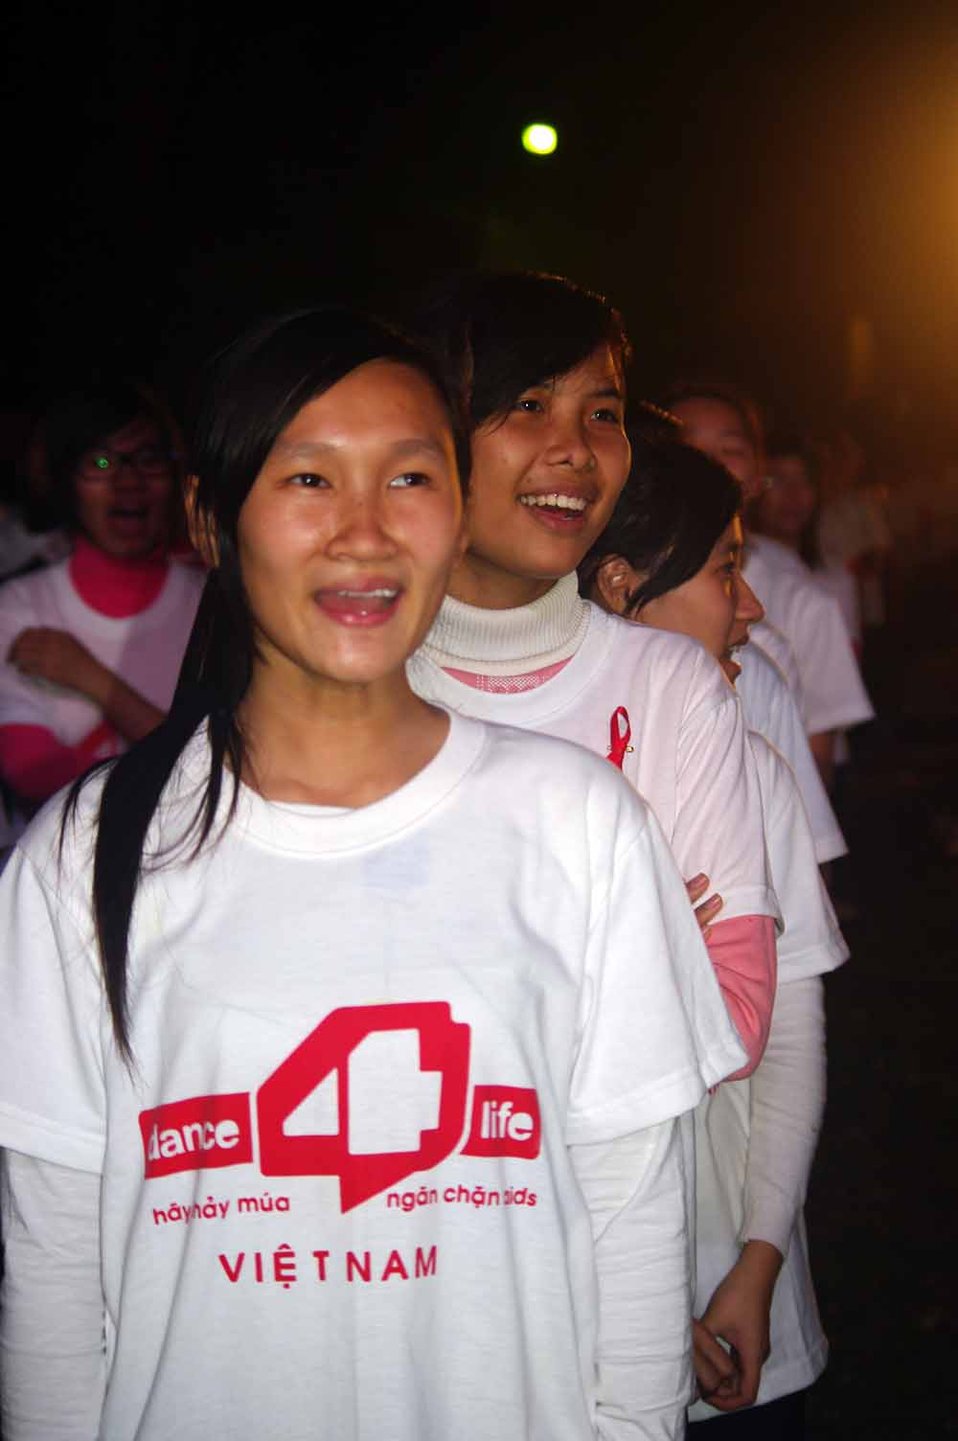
dance4life, Hanoi